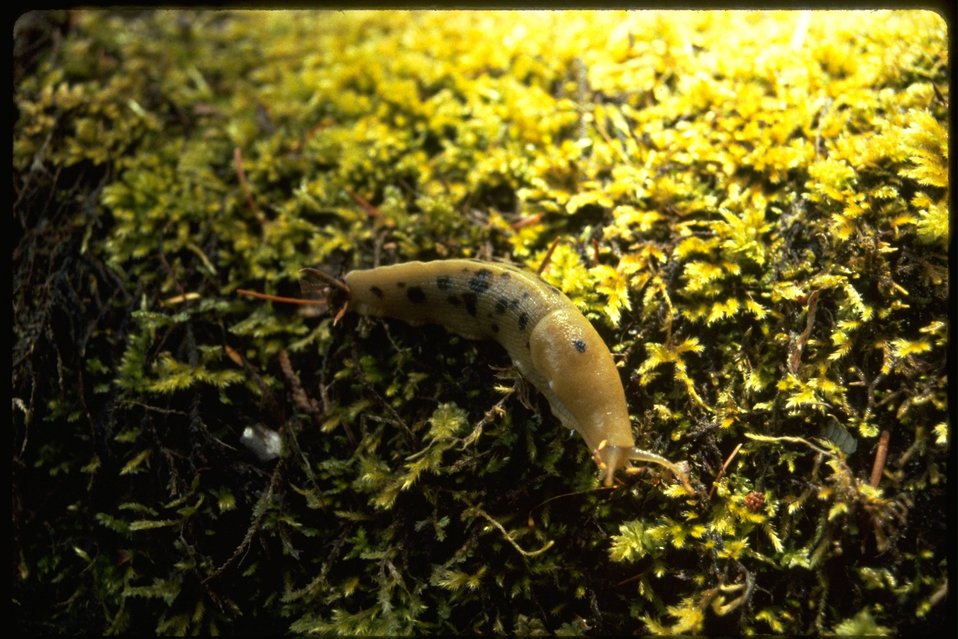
Macro shot of a banana slug.